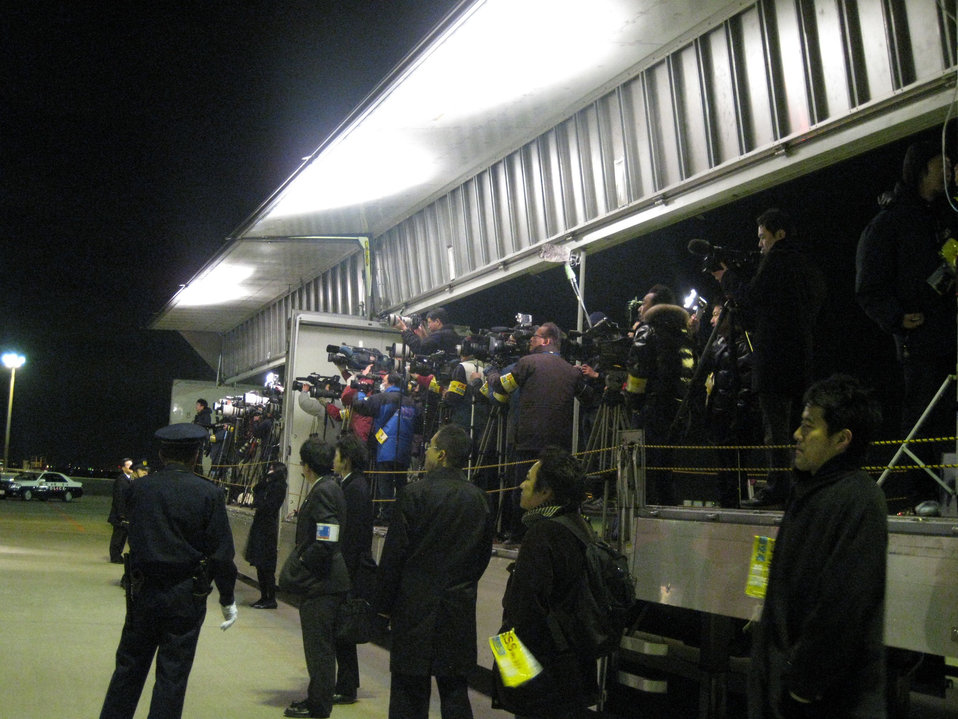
Local Press Set-Up in Tokyo

Local press preparing for the arrival of U.S. Secretary of State Hillary Clinton at Haneda Airport in Tokyo, Japan February 16, 2009.